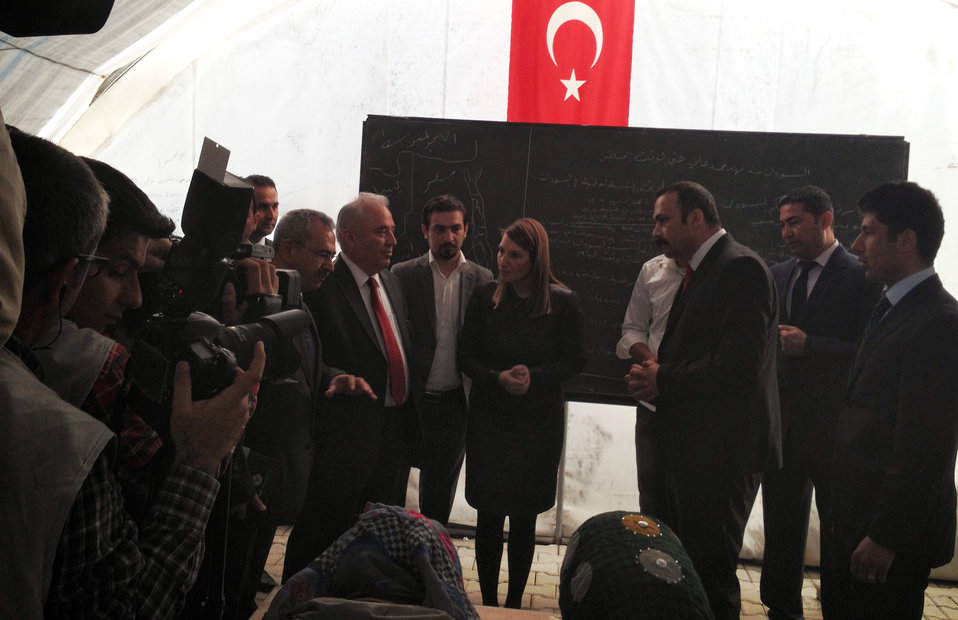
Deputy Secretary Higginbottom Visits a Classroom at a Syrian Refugee Camp

Deputy Secretary of State for Management and Resources Heather Higginbottom speaks with Turkish officials and Syrian children in a classroom at a Syrian Refugee Camp outside of Adana, Turkey, on March 21, 2014.